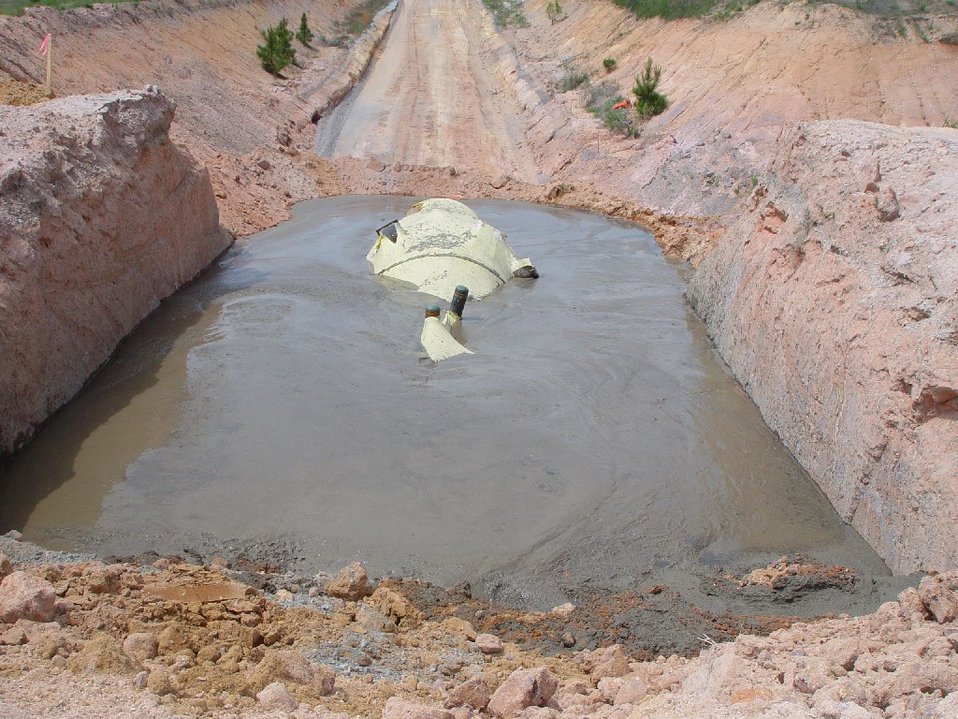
HWCTR PV Disposal, 4-21-11

Recovery Act workers removed the Heavy Water Components Test Reactor vessel, shown here, and permanently disposed it onsite.